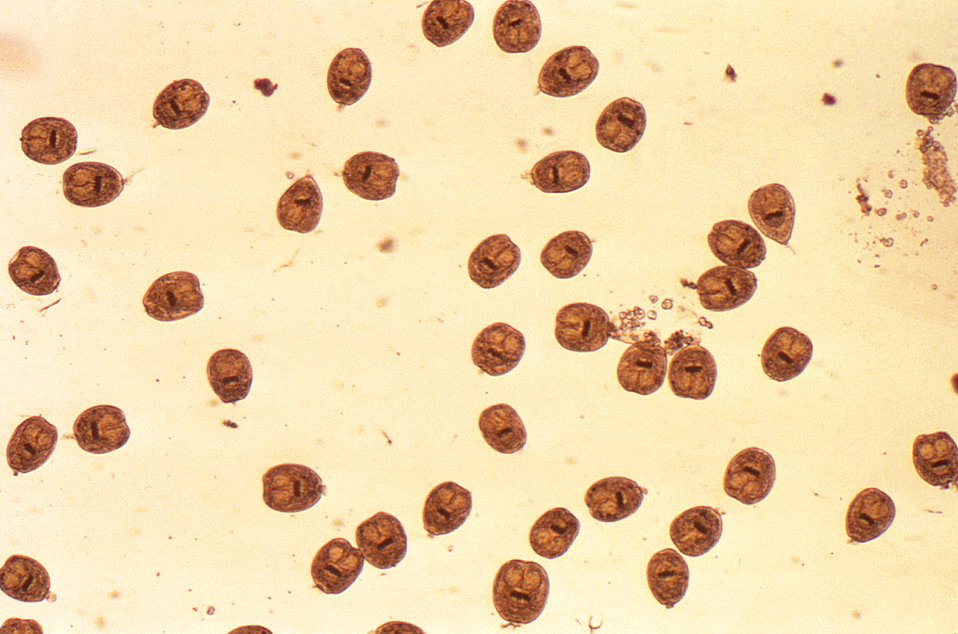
Under a low magnification of only 40X, this photomicrograph depicted numbers of Echinococcus scoleces cystic-staged parasitic cestodes. During their life cycle within the host, these tapeworms pass through an egg stage, followed by a oncosphere-stage, which is followed by the formation of a cystic stage, which undergoes enlargement producing protoscolices and daughter cysts. Rupture of these cysts releases the larval protoscolices, and a condition known as 'hydatid sand', which is what is depicted here.